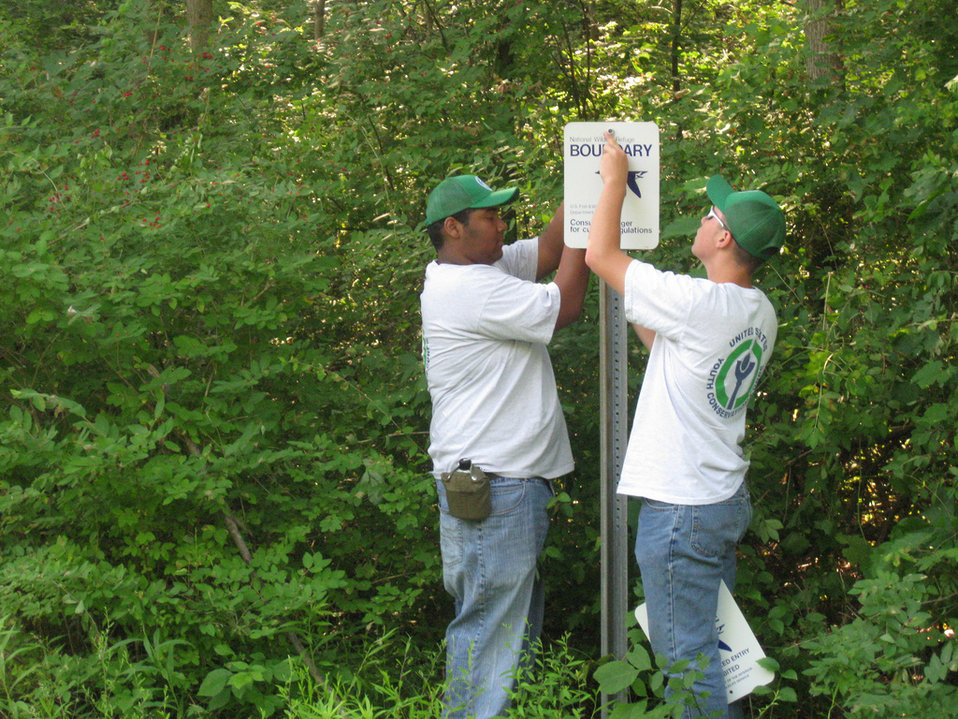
Boundary signs

U.S. Fish and Wildlife Service